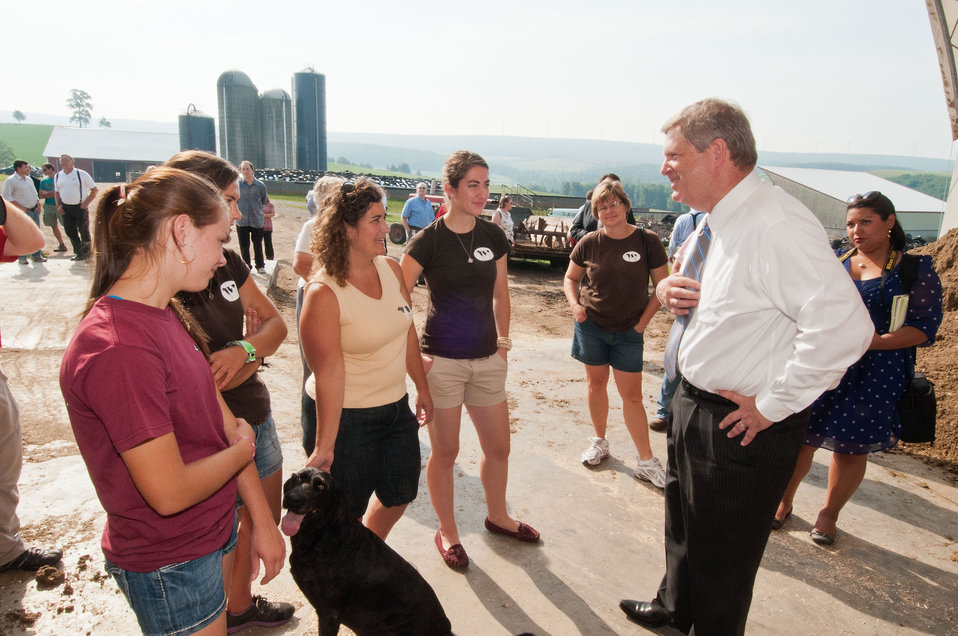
From left: Ashley Stoltzfus, Justine Stoltzfus, “Dixie”, Gail Stoltzfus, Madison Stoltzfus and Agriculture Secretary Tom Vilsack discuss their mutual love of man’s best friend during Secretary Vilsack’s visit to the Stoltzfus’ Pennwood Dairy Farms in Berlin, PA on Tuesday, July 17, 2012. During Secretary Vilsack’s visit he highlighted the U.S. Department of Agriculture's (USDA) energy efficiency programs and announced a new effort to help rural consumers make affordable, energy-efficient improvements to their homes and businesses.